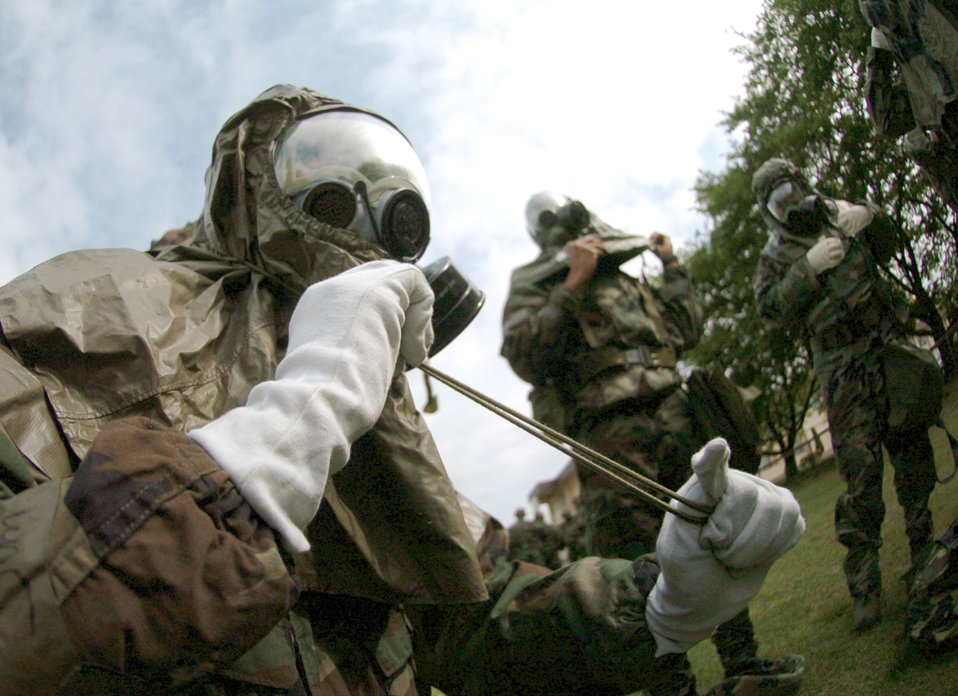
Civil engineers train for chemical attacks

YOKOTA AIR BASE, Japan -- Master Sgt. Clairesa Campbell (left) dons her chemical warfare gear during